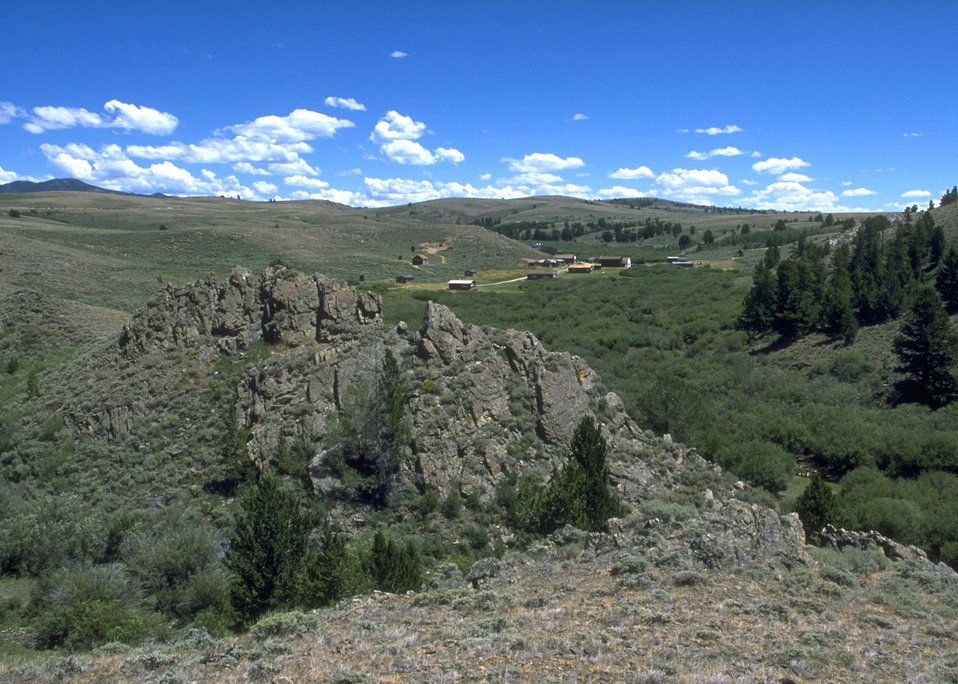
View from Jackson's Point near South Pass City, Lander Field Office.